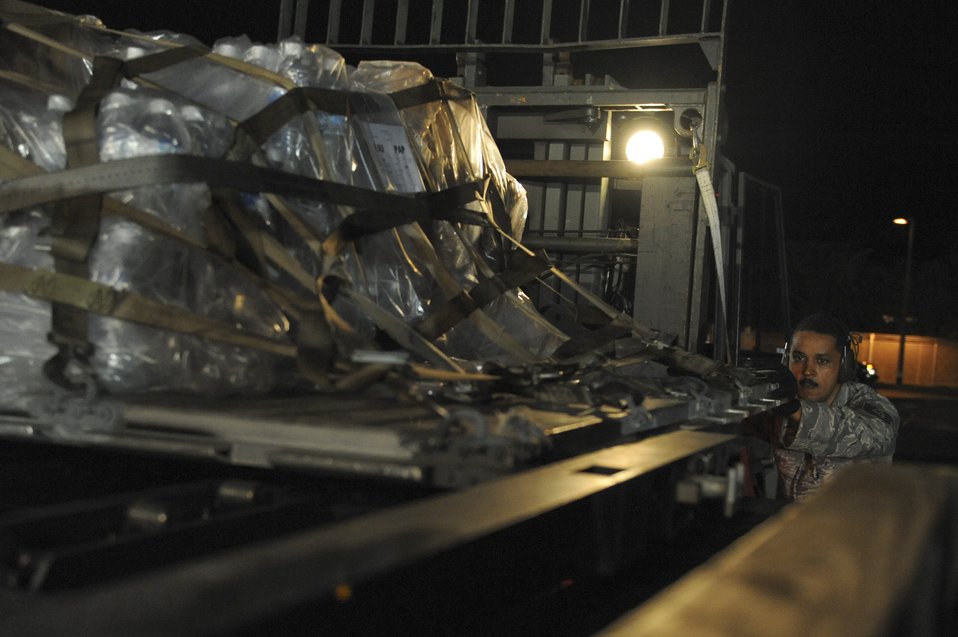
haiti night mission

Airmen from the Puerto Rico Air National Guard's 156th Airlift Wing load cargo onto a C-130E Hercules aircraft Jan. 16, 2010, to support the relief effort in Haiti in the aftermath of a devastating earthquake.